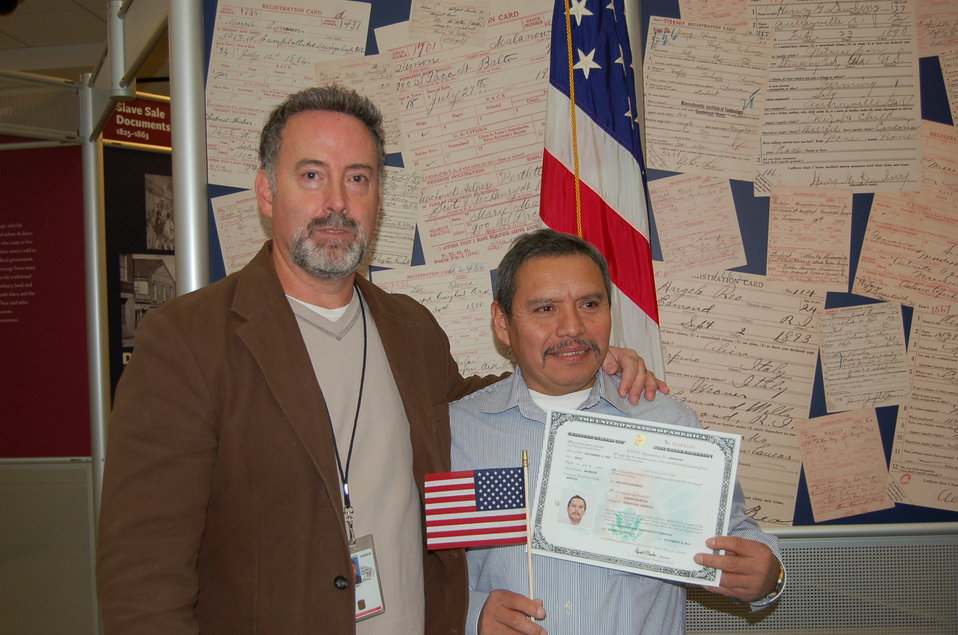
New Citizens